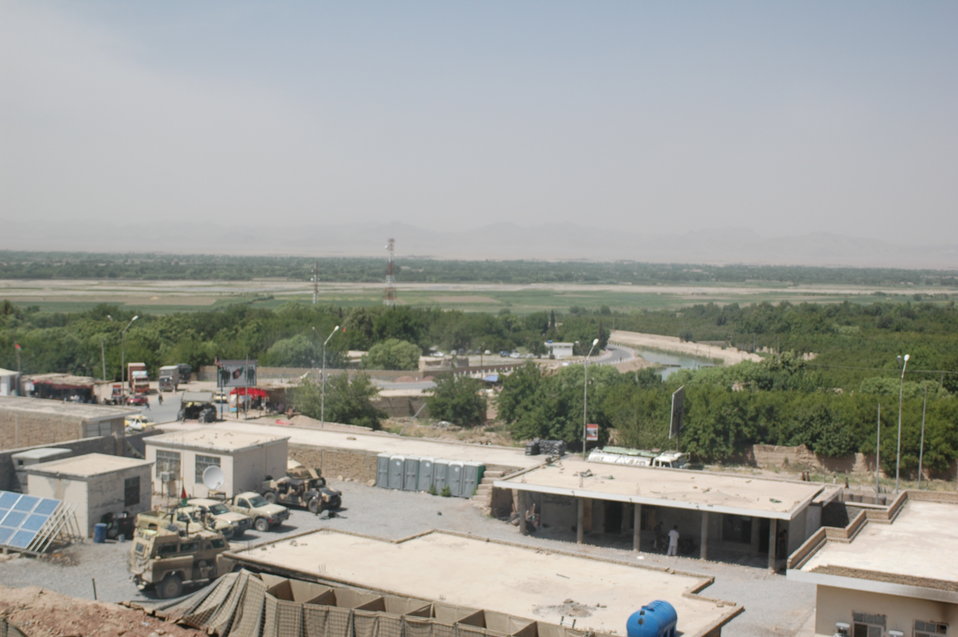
Dr Shah Visits Kandahar April 9, 2010